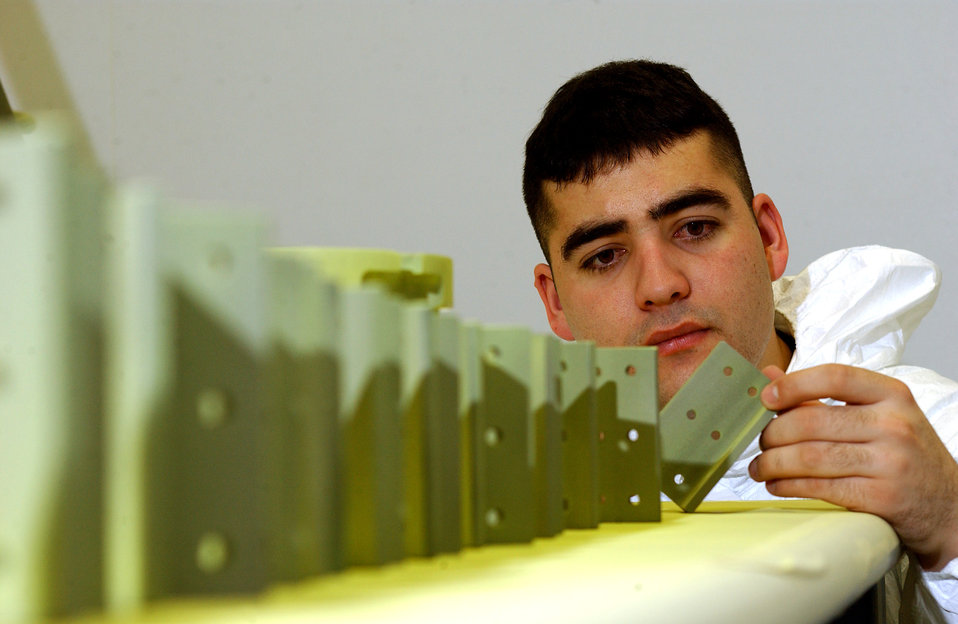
Bake with an even coating

ROYAL AIR FORCE MILDENHALL, England -- Staff Sgt. Corey Wright inspects MH-53J Pave Low blade weights April 15 to ensure an even coating has been applied using the three-part spray paint and drying booth combination. Sergeant Wright is an aircraft structural maintainer on temporary duty here from Fairchild Air Force Base, Wash.